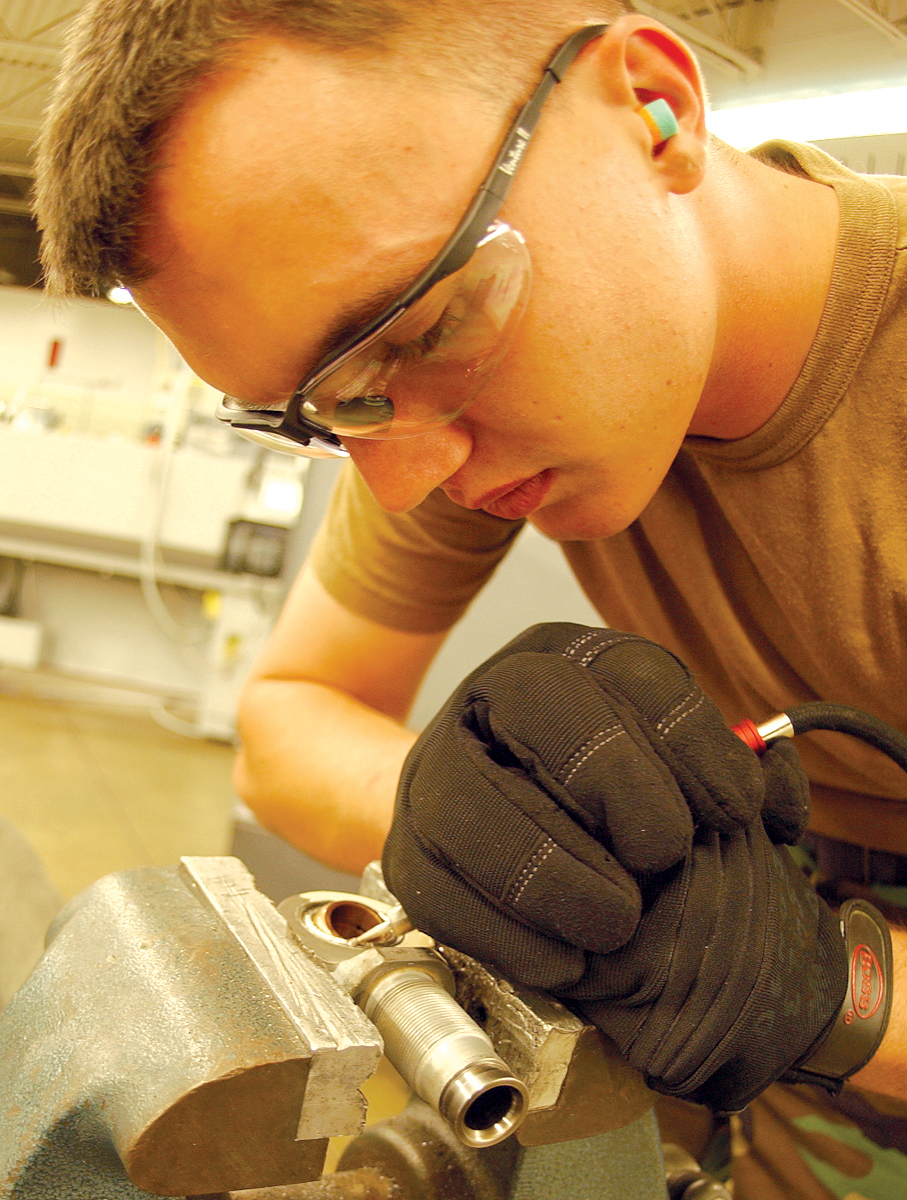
An exact science

SEYMOUR JOHNSON AIR FORCE BASE, N.C. -- Airman 1st Class Gregory Frye repairs a linear actuator cylinder. The cylinder is part of the main landing gear assembly for one of 96 F-15E Strike Eagles assigned here. Airman Gregory is assigned to the 4th Equipment Maintenance Squadron.